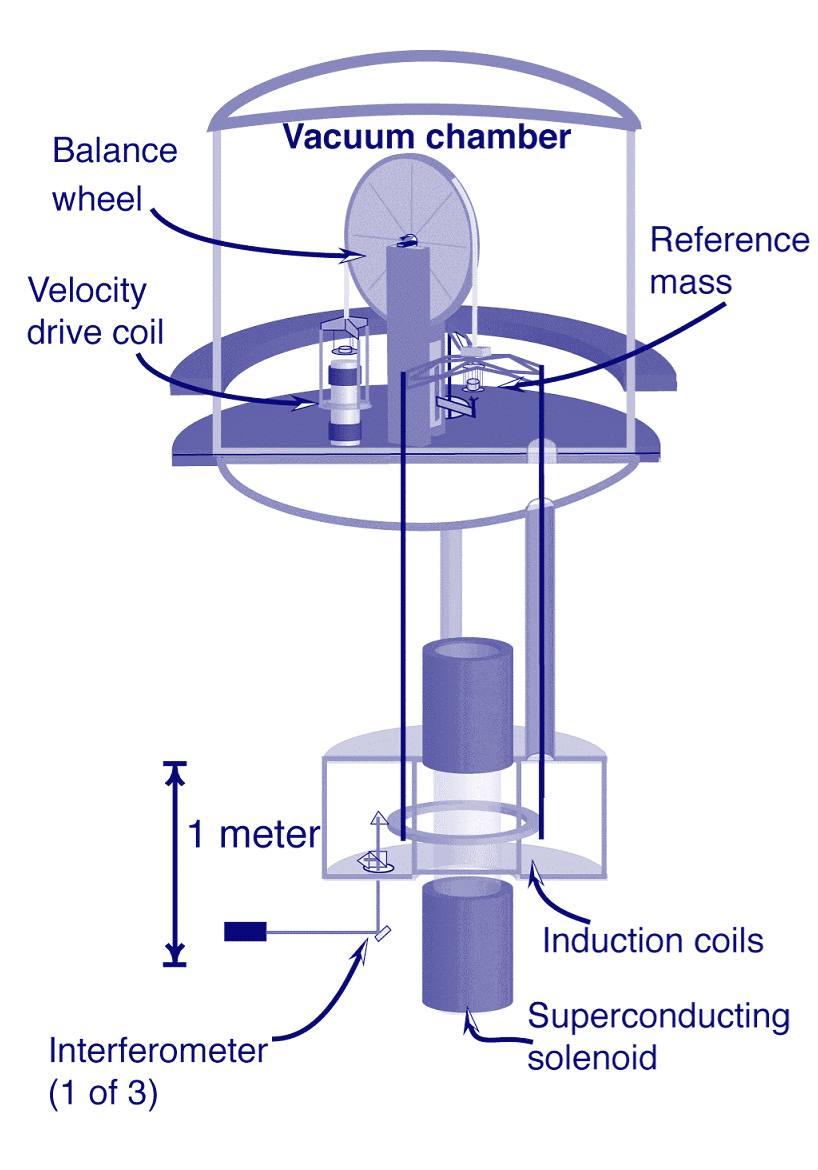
Electronic Kilogram and Watt Balance Schematic

In the NIST watt balance experiment, a kilogram test mass is placed on a balance pan that is connected to a coil of copper wire, which surrounds a superconducting electromagnet. If electric current is sent through the coil, then just as in an electric motor, electromagnetic forces are produced to balance the weight of the test mass. The apparatus measures this current and force. The apparatus also can move the coil vertically, and, like an electric generator, that induces a voltage. The velocity and voltage of the coil also are measured. These four measurements determine the relationship between mechanical and electrical power, which can be combined with other basic properties of nature to redefine the kilogram.